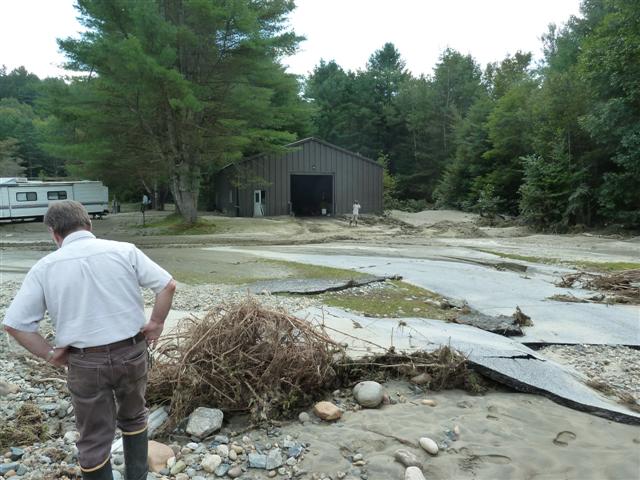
Damage at White River NFH - Bethel, VT

Pavement and road damage.